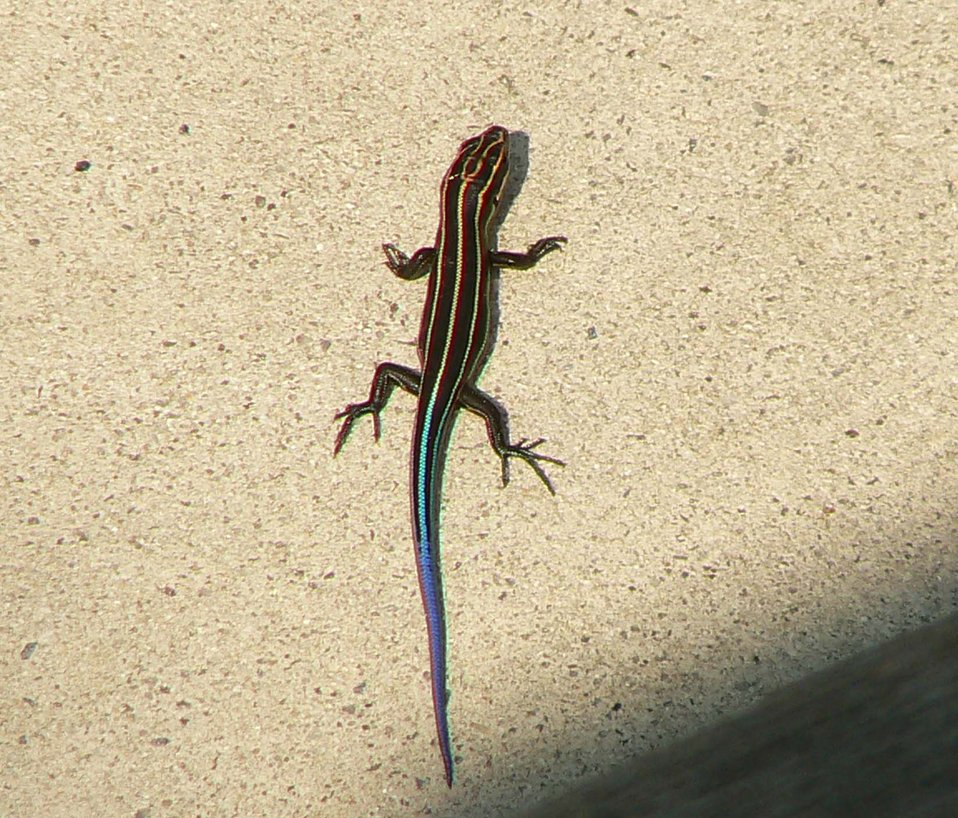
Blue-tailed skink.